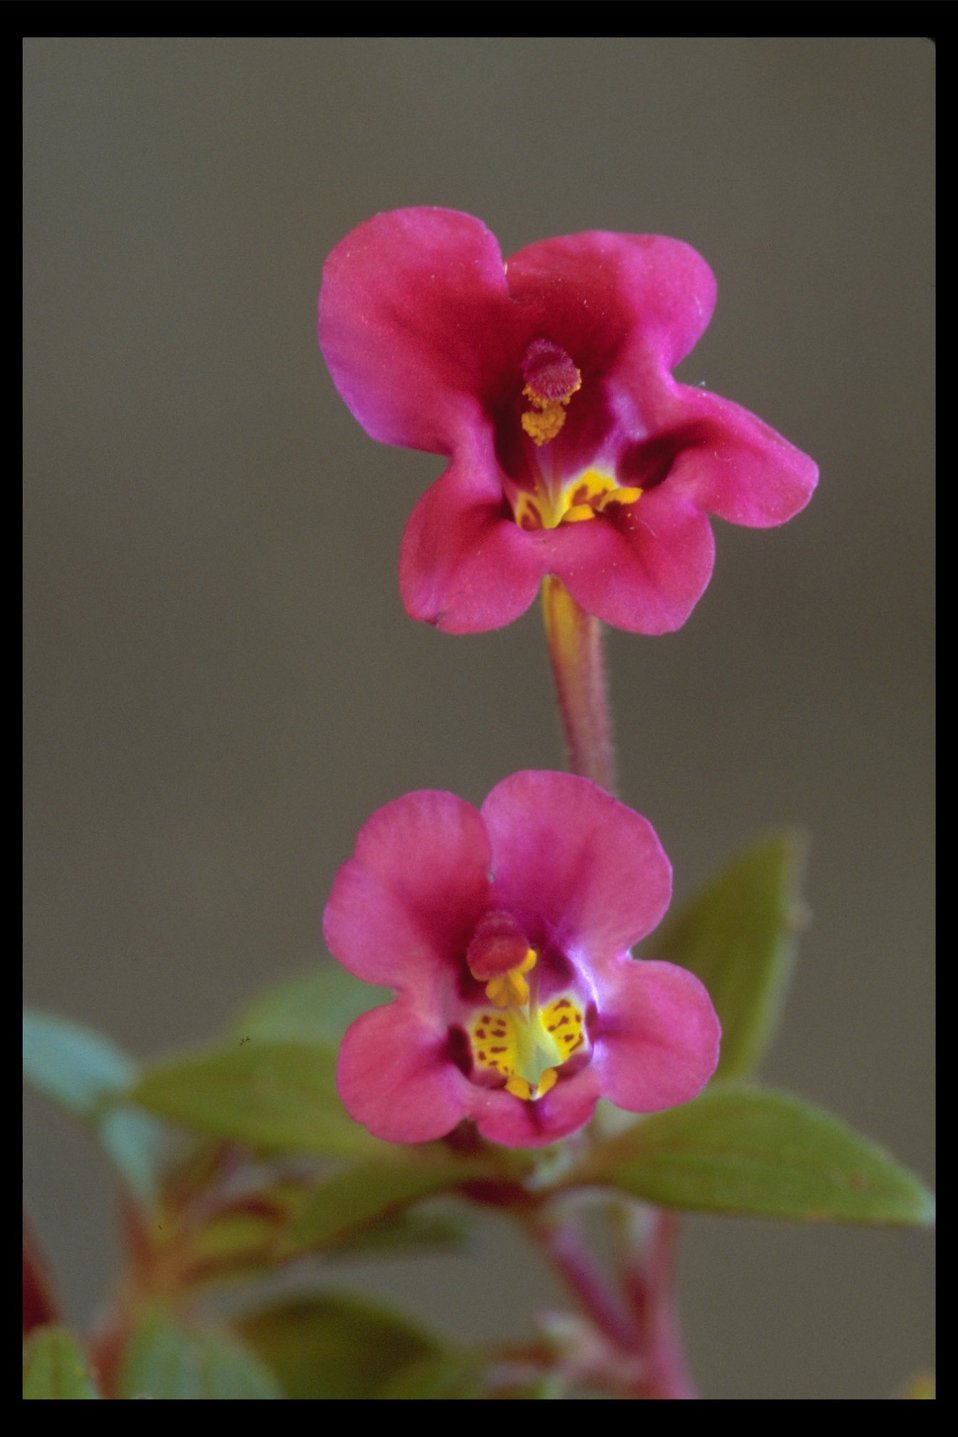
Kellogg's Monkey Flower (Mimulus kelloggii) near Lost Creek Lake.